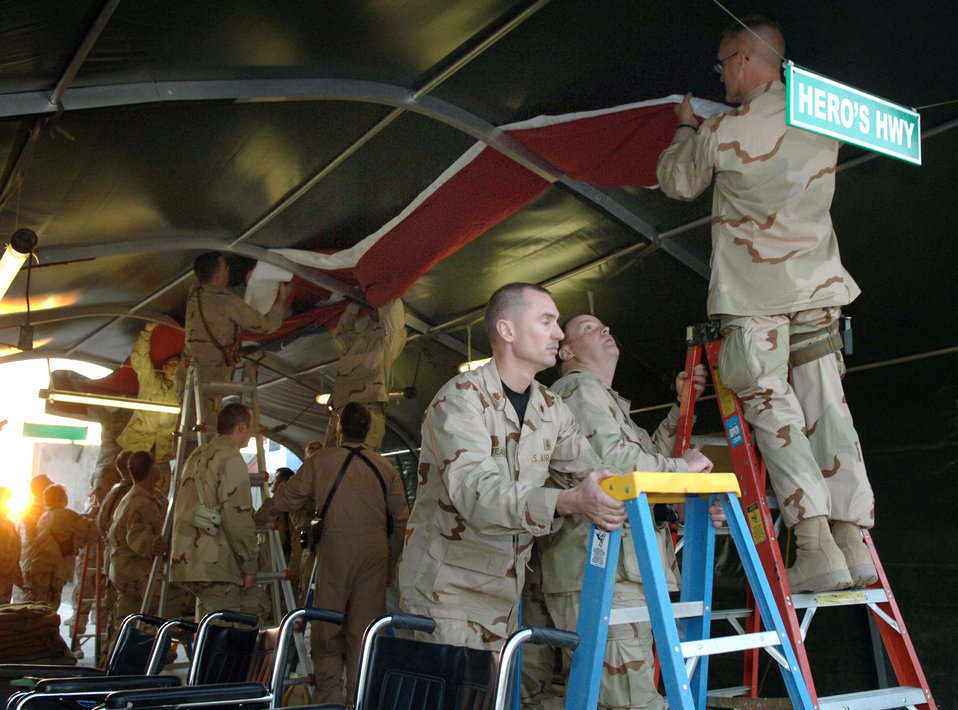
Hero's Highway begins in Iraq

Airmen deployed to the 332nd Air Expeditionary Wing unfold an American flag at the Hero's Highway Ceremony Jan. 22 at Balad Air Base, Iraq. The flag is posted on the inner roof a tent so injured troops can look up and know they are in an American area when brought in on litters seeking medical treatment. The medical group raised injured troops' survival rate to 98 percent.